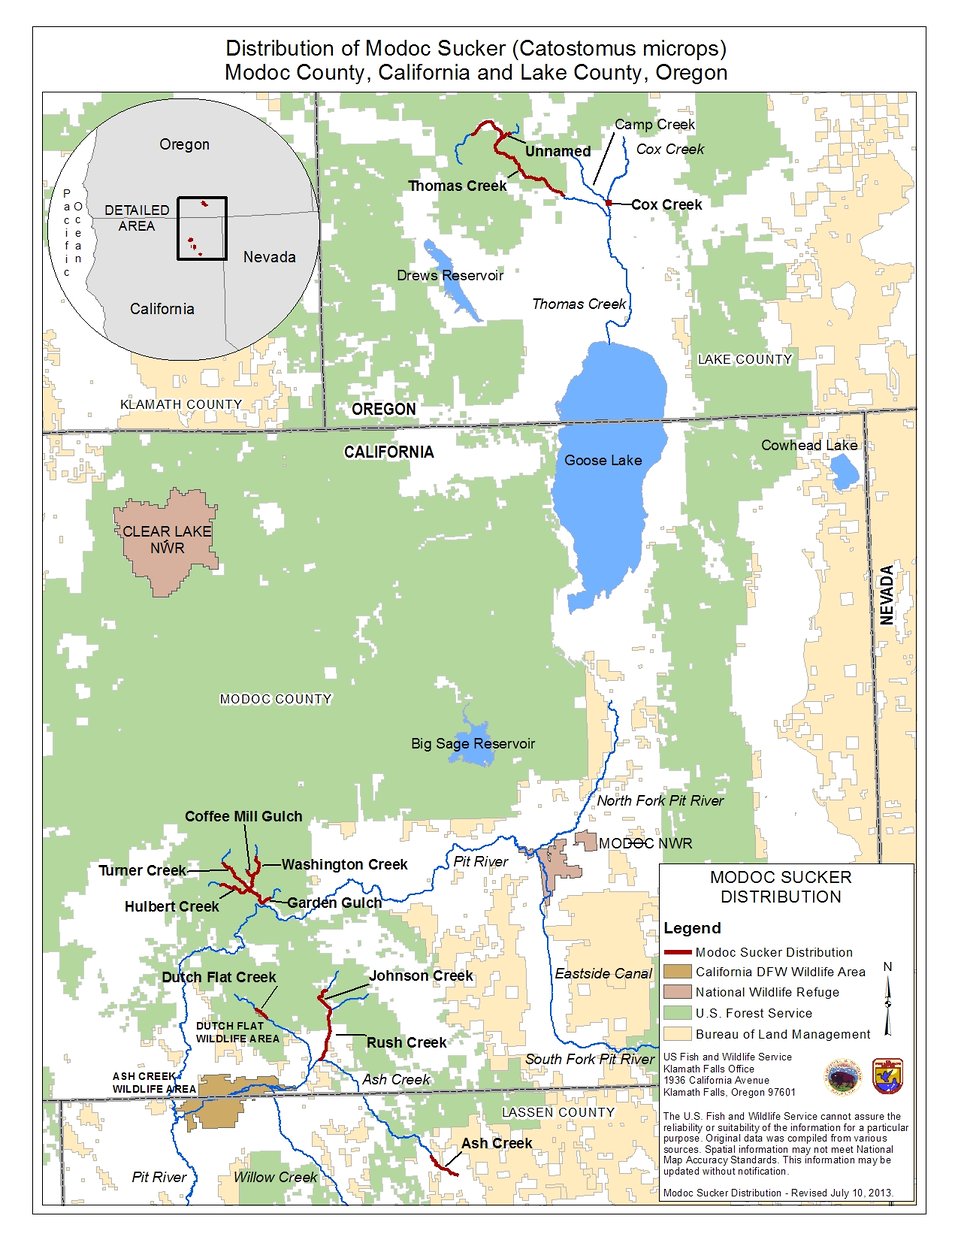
modocsucker map

Modoc sucker habitat - map.